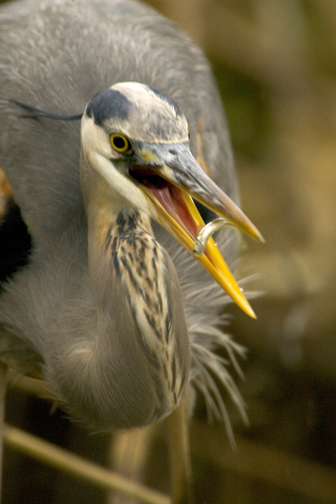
Photo of the Week - Great Blue Heron (VA)

Photo of the Week - 6/11/12

Great blue heron feeding at Chincoteague National Wildlife Refuge.